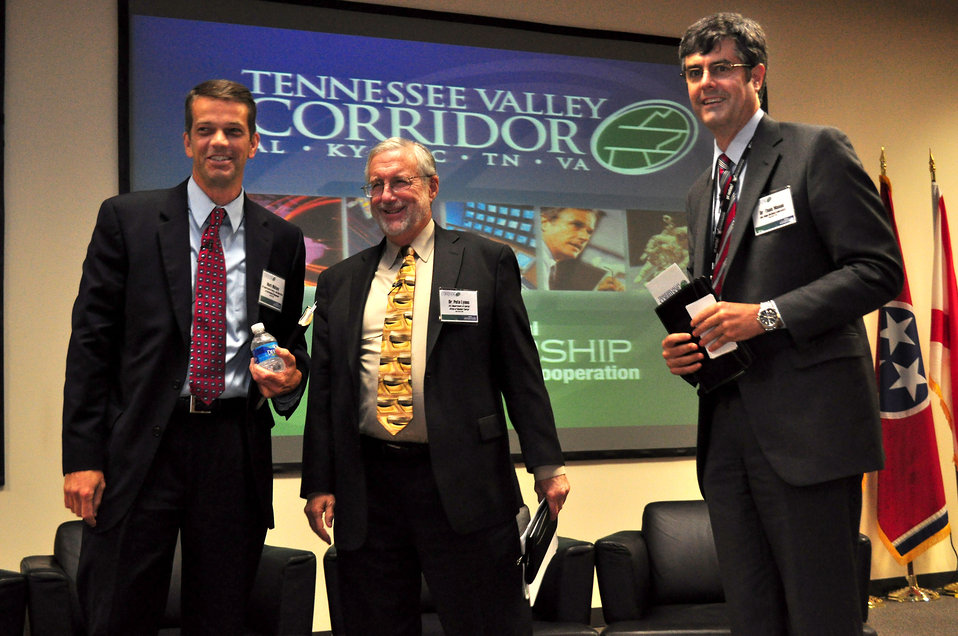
Tennessee Valley Corridor 2013 Oak Ridge

13-062 DOE photo Lynn Freeny 5-29-2013 L to R Mark Whitney Manager EM ORO, Dr. Peter Lyons DOE Assistant Secretary for Nuclear Energy and Dr. Thom Mason ORNL Lab. Director Oak Ridge Tennessee